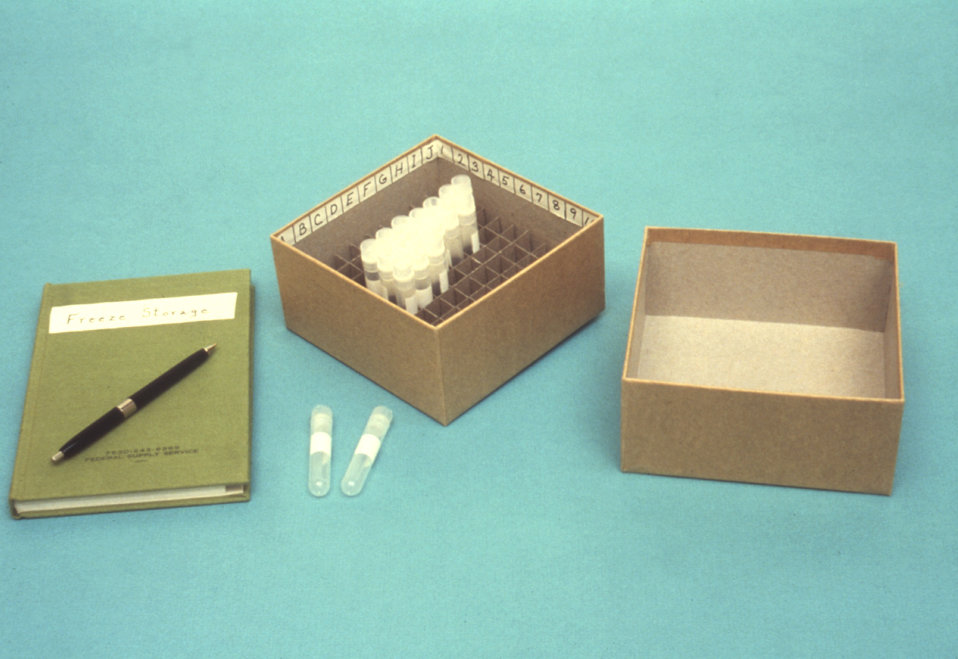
This image depicts laboratory products involved in the freezing, lyophilizing, storing, and shipping of anaerobic bacteria.